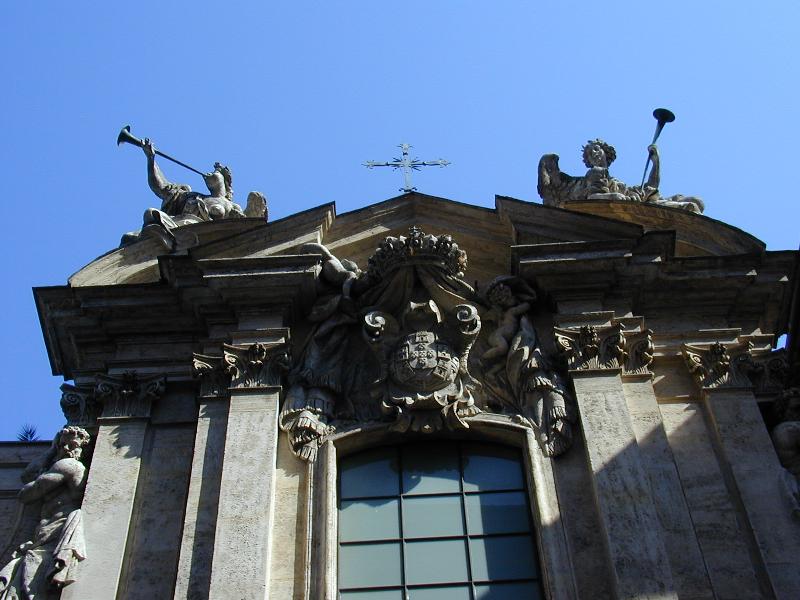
000815 4 s antonio ai portoghesi 2